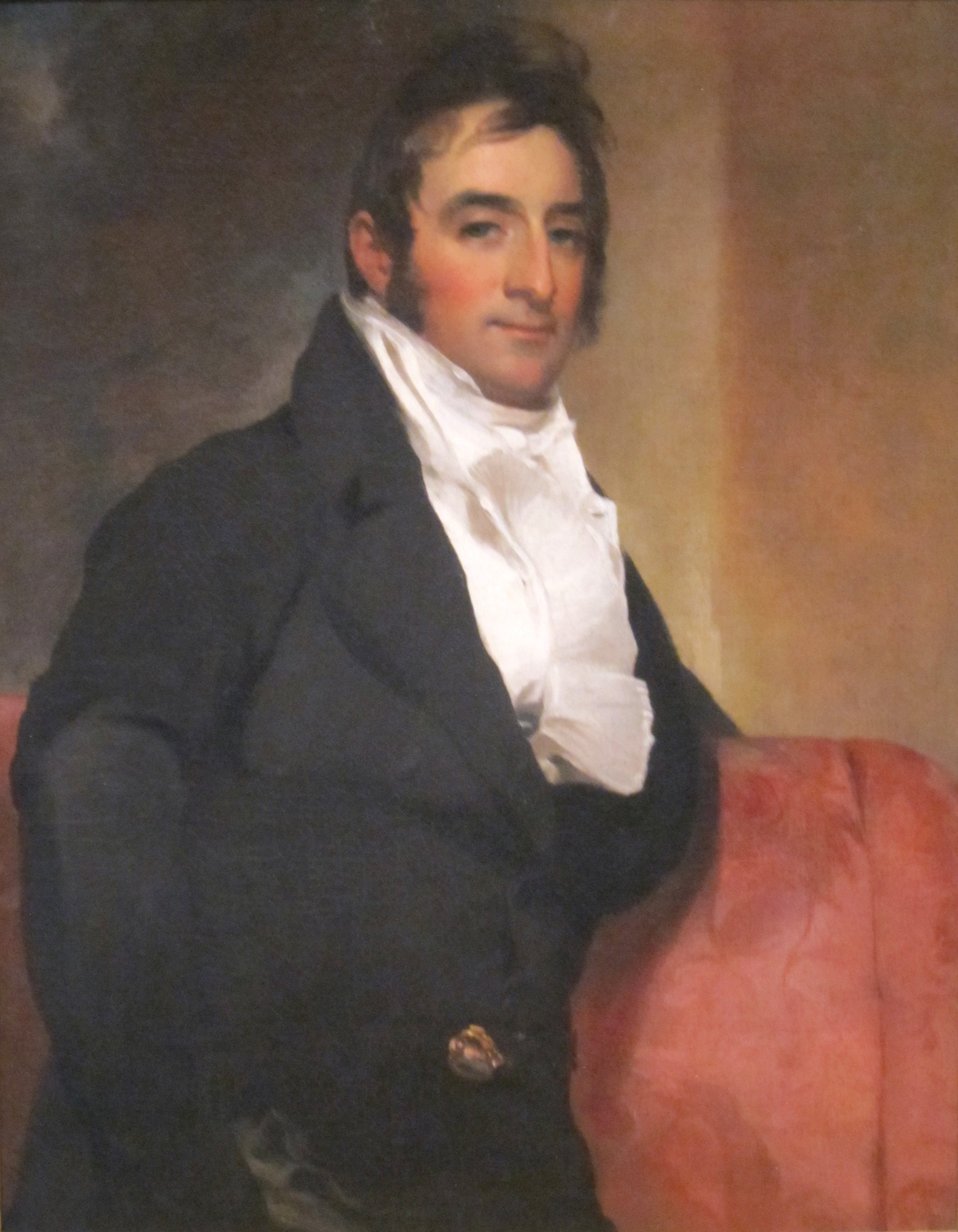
Elias Jonathan Dayton, oil on canvas painting by Thomas Sully, 1813, Dayton Art Institute